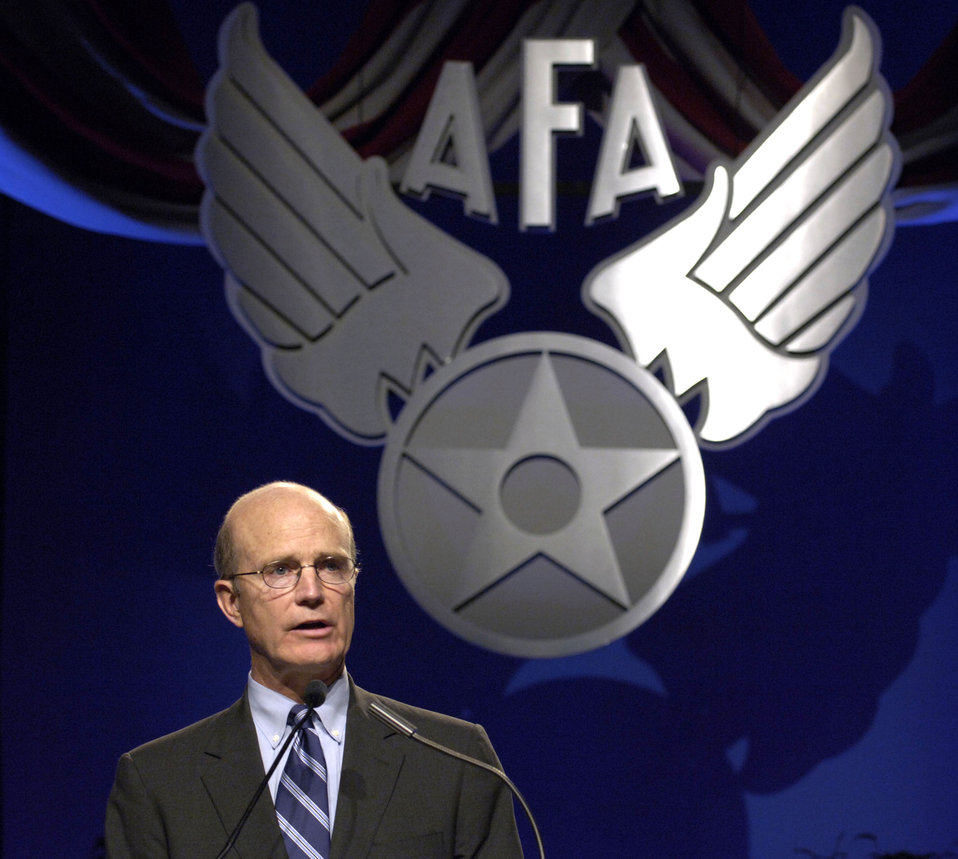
Geren: AF fighting three wars

WASHINGTON -- Acting Secretary of the Air Force Pete Geren gives his state of the Air Force address here Sept. 12 to attendees of the Air Force Association's 2005 Air and Space Conference and Technology Exposition.